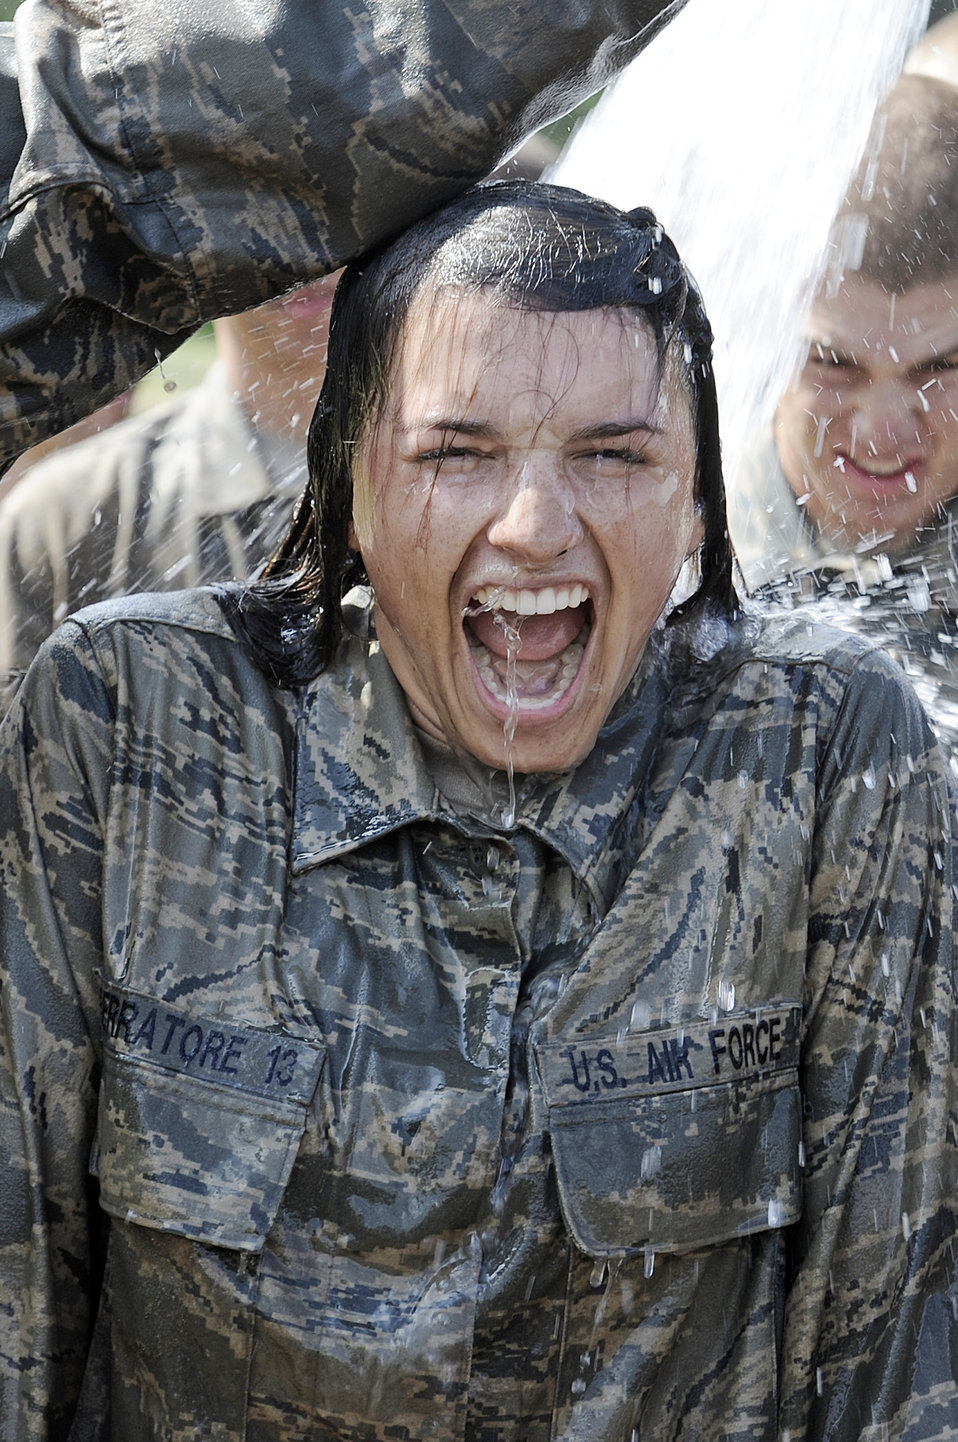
Academy basic field training at Jacks Valley

Celebrating the finish of the Jacks Valley Assault Course, Air Force Academy Basic Cadet Carly Serratore gets drenched with cold water. The Class of 2013 will swear the Honor Oath at their Aug. 5 acceptance parade, when they earn status as fourth-class cadets. The fall academic semester begins Aug. 6.